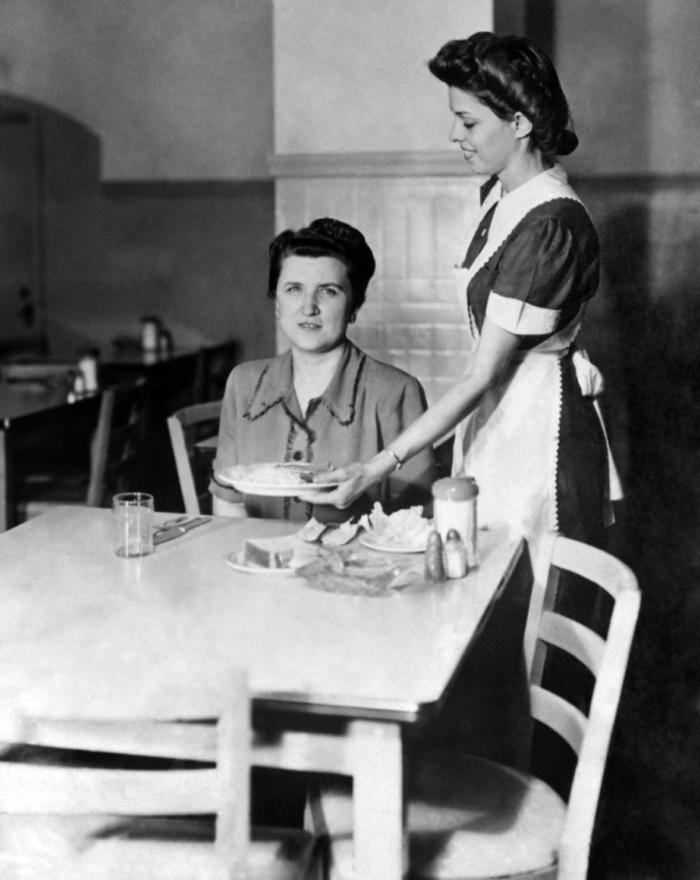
This historic 1950s image depicted a restaurant food server whose behavior was consistent with reducing the risk of transferring a communicable infection to a restaurant patron. The server was carrying individual dishes to the table, and had not attempted to carry too many plates, thereby, avoiding food contamination. In her actions, she was minimizing the possibility for disease transmission to the customer.